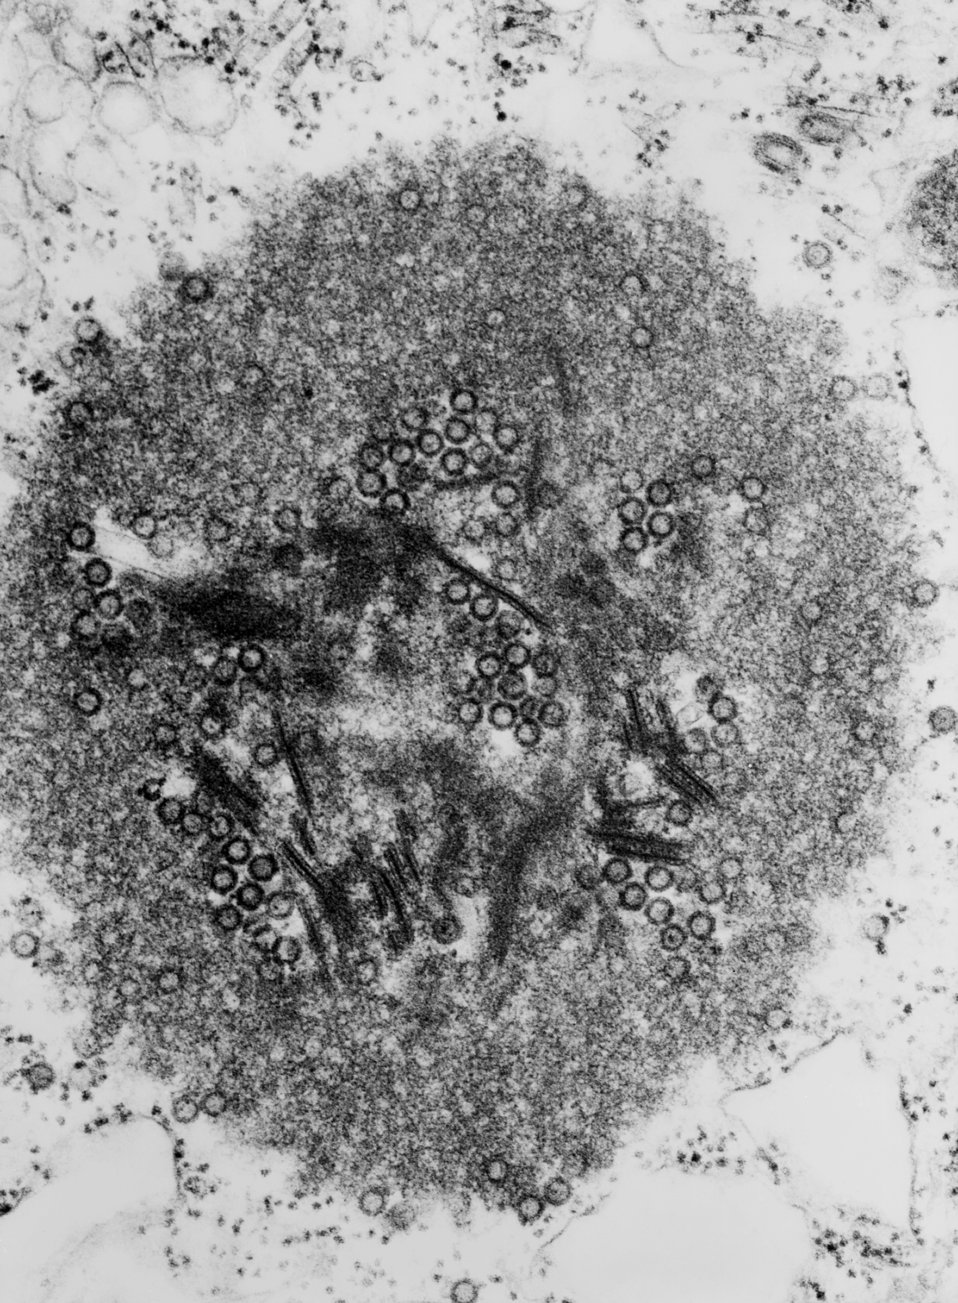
This transmission electron micrograph (TEM) revealed some of the morphologic details displayed by the Tribec virus, a member of the genus Orbiviruses, which is one of nine genera of the virus family known as the Reoviridae. As an arbovirus, Tribec virus is spread through the bite of insect vectors such as mosquitoes, ticks, and sand flies.